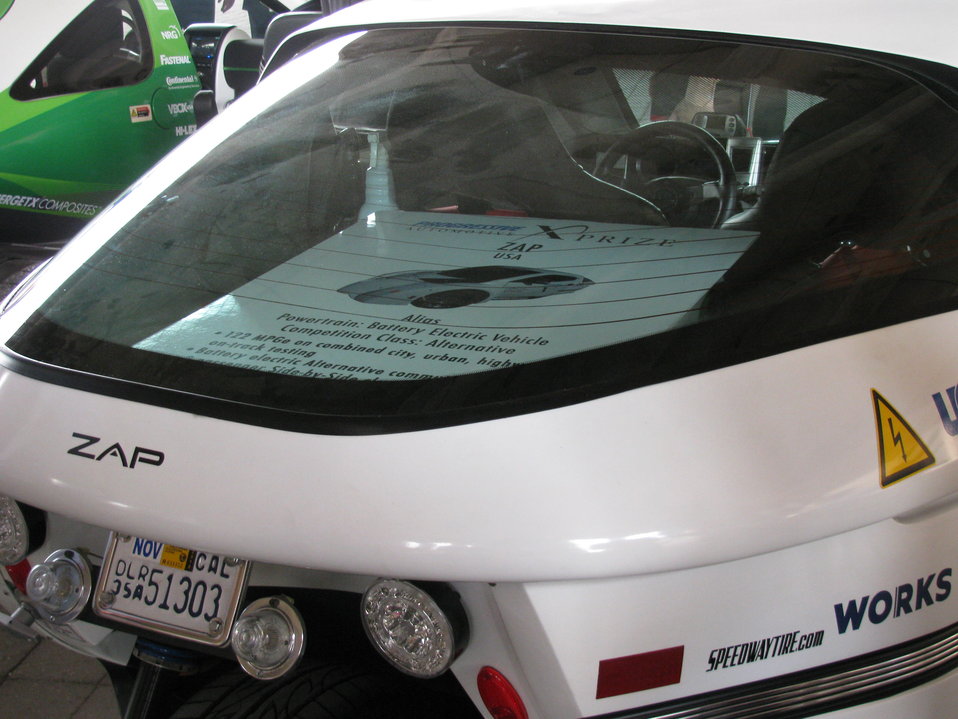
X Prize 073